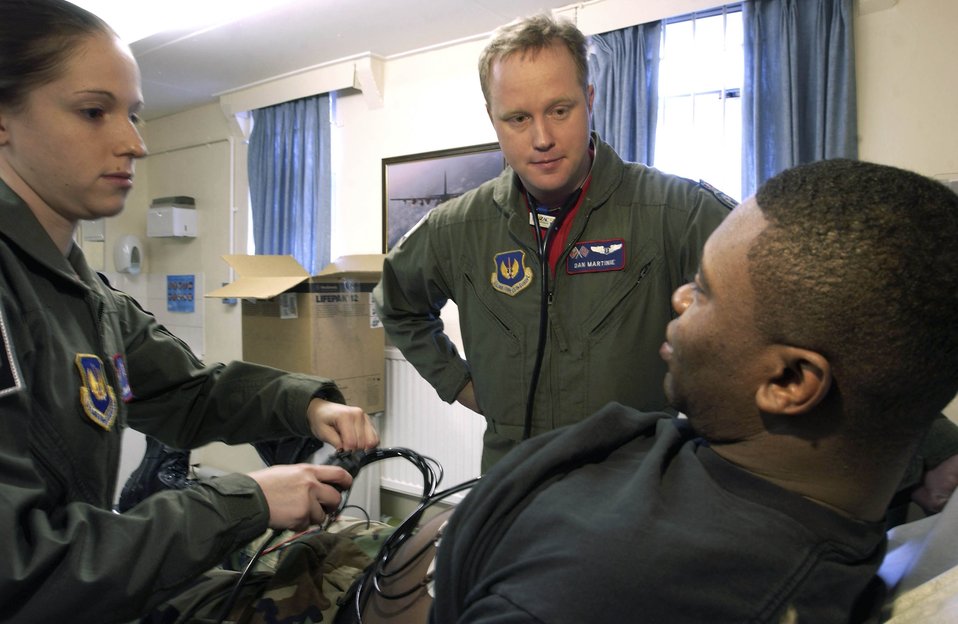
And the prognosis is...

ROYAL AIR FORCE FAIRFORD, England -- Maj. (Dr). Dan Martinie explains an electrocardiogram to Tech. Sgt. Reginald Bailey, while Staff Sgt. Laura Forgione prepares him for the procedure. Dr. Martinie and Sergeant Forgione are assigned to the 351st Air Refueling Squadron's medical element at Royal Air Force Mildenhall. The 351st ARS will fly from here until September while Mildenhall's flightline is under construction.